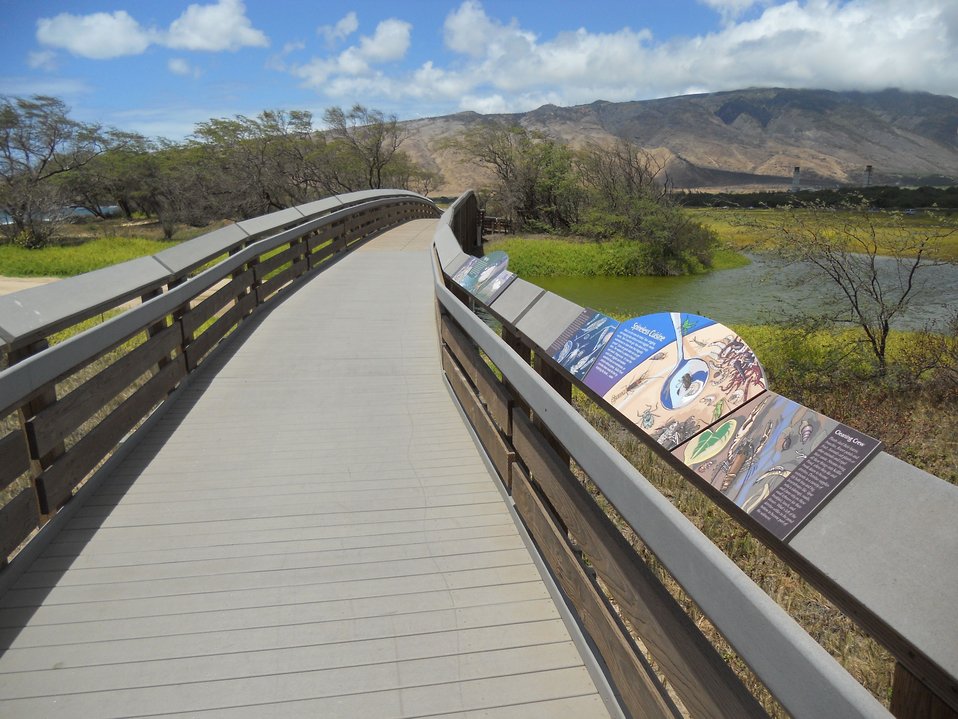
Boardwalk bridge, Kealia Pond, Hawaii

Kealia Pond National Wildlife Refuge, Hawaii.